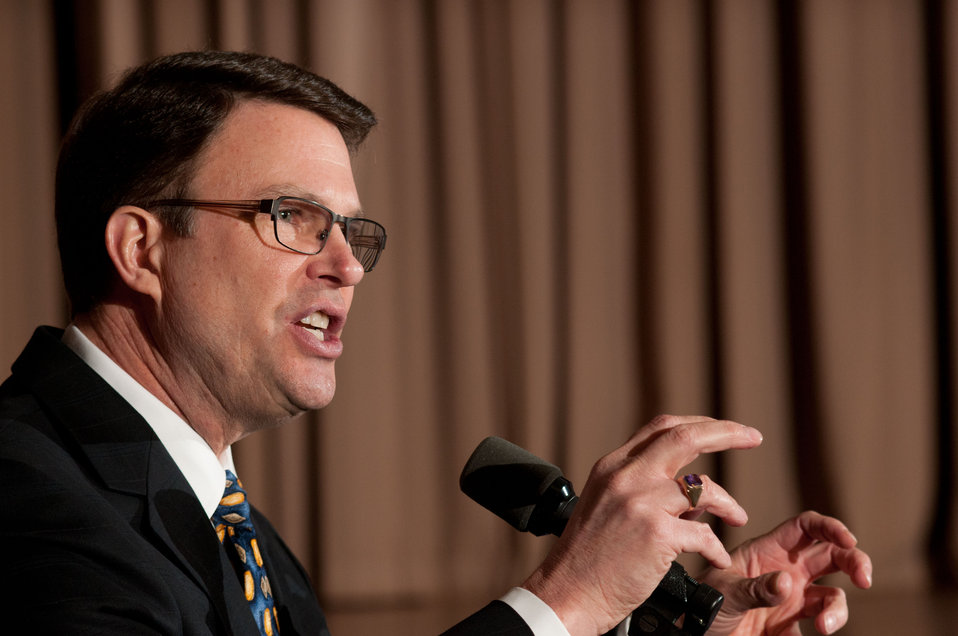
Office of Personnel Management Director John Berry addresses the Work Force Recruitment Program’s (WRP) 'Your Key To Hiring Student Interns and Employees with Disabilities” event hosted by the United States Department of Agriculture (USDA) in the Jefferson Auditorium, Washington, D.C. on Tuesday, February 7, 2012.